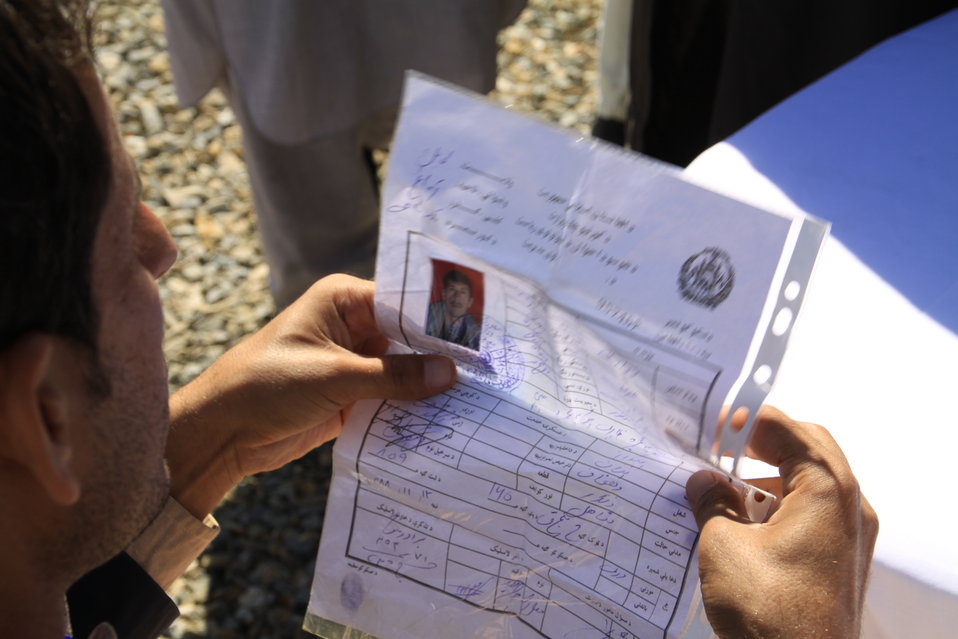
AVIPA Plus Wheat Seed Distribution 101005

US Ambassador Karl Eikenberry and USAID Acting Mission Director Kevin Brownawell joined the Minister of Agriculture, Irrigation and Livestock, H.E. Minister Mohammed Rahimi in signing a Memorandum of Understanding and distributing vouchers to area farmers for wheat and fertilizer.

US Ambassador Karl Eikenberry and USAID Acting Mission Director Kevin Brownawell joined the Minister of Agriculture, Irrigation and Livestock, H.E. Minister Mohammed Rahimi in signing a Memorandum of Understanding and distributing vouchers to area farmers for wheat and fertilizer.

US Ambassador Karl Eikenberry and USAID Acting Mission Director Kevin Brownawell joined the Minister of Agriculture, Irrigation and Livestock, H.E. Minister Mohammed Rahimi in signing a Memorandum of Understanding and distributing vouchers to area farmers for wheat and fertilizer.